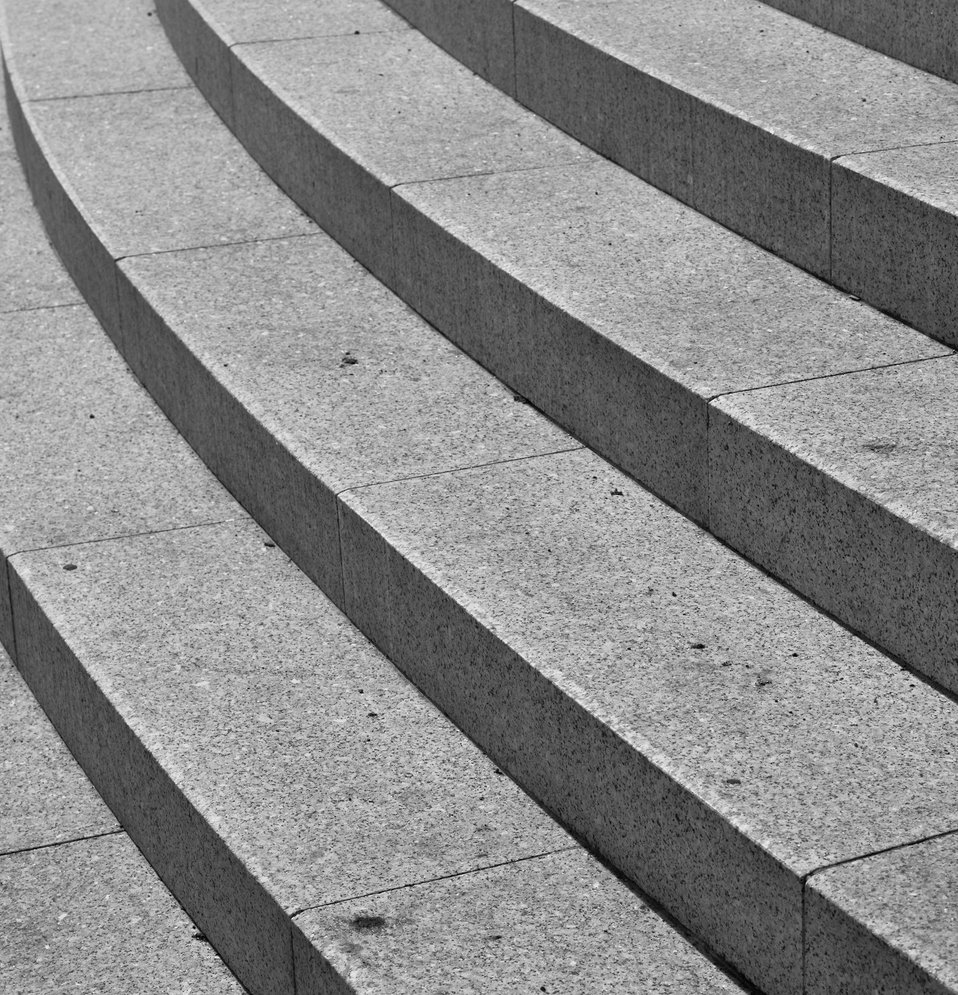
Lines

Stairs to ....